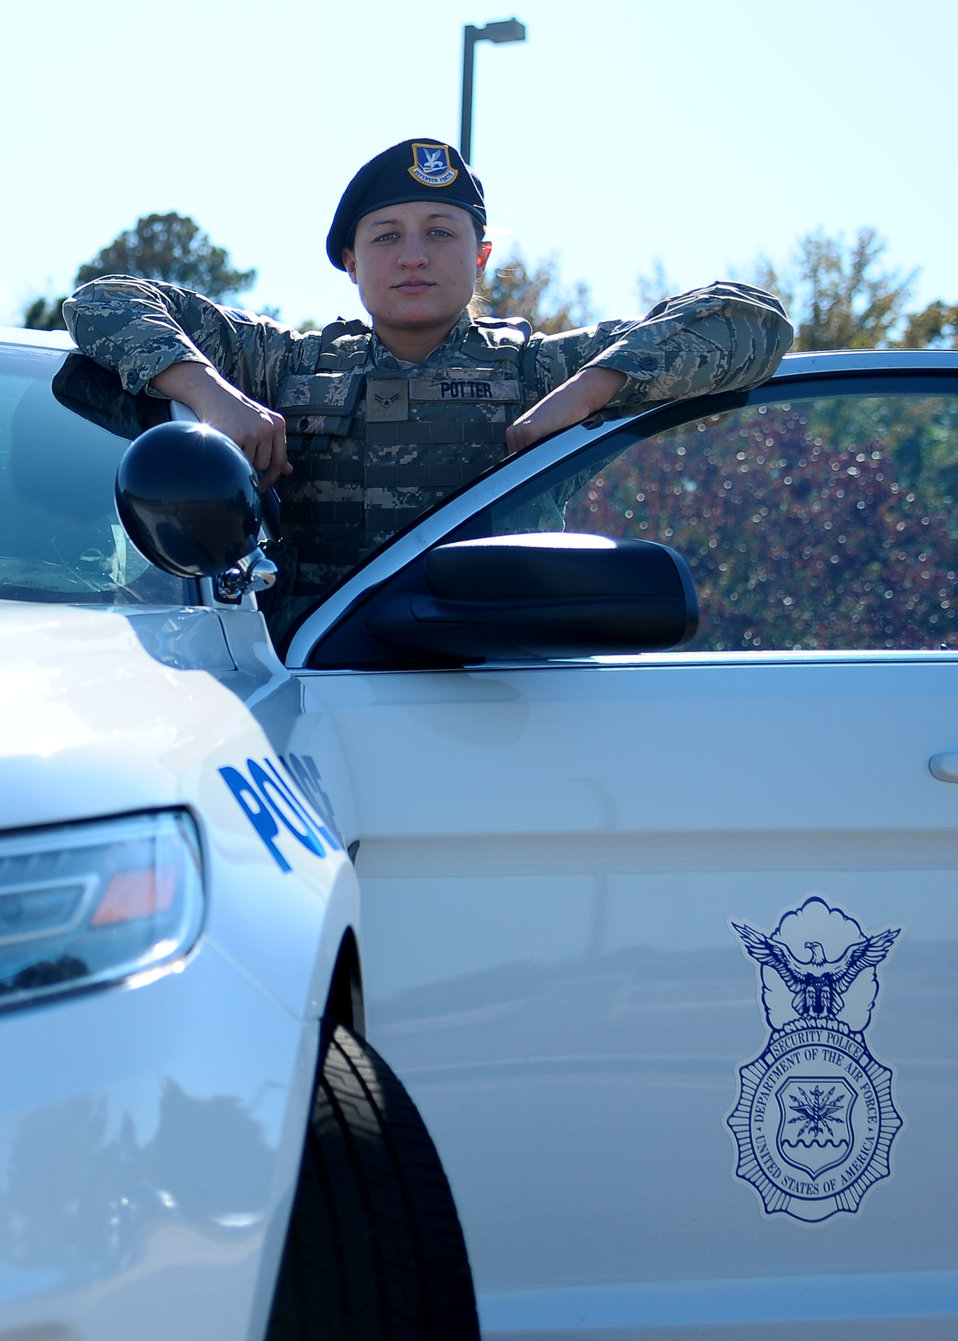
Ready to defend

Airman 1st Class Tiffani Potter begins her patrol Nov.1, 2012 on Columbus Air Force Base, Miss. Potter is a Patrolman with the 14th Security Force Squadron and recently graduated from the close precision engagement course and achieved her life goal of becoming a certified sharpshooter.